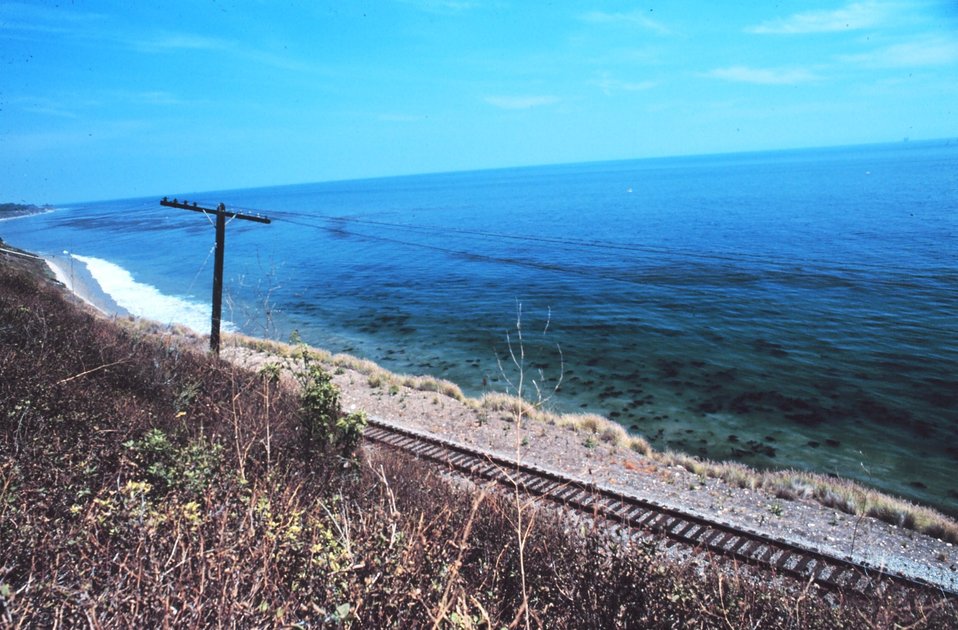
Looking over a seaboard railroad track to offshore kelp beds near Lompoc